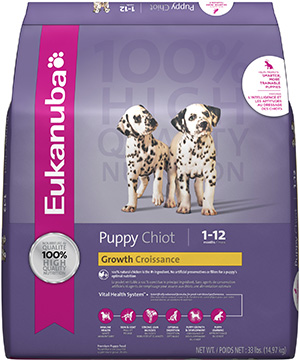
RECALLED – Dog and Cat foods - Dry

August 14, 2013 – Product Recall – P&G Voluntarily Recalls Limited Quantity of Dry Pet Food Due to Possible Health Risk.